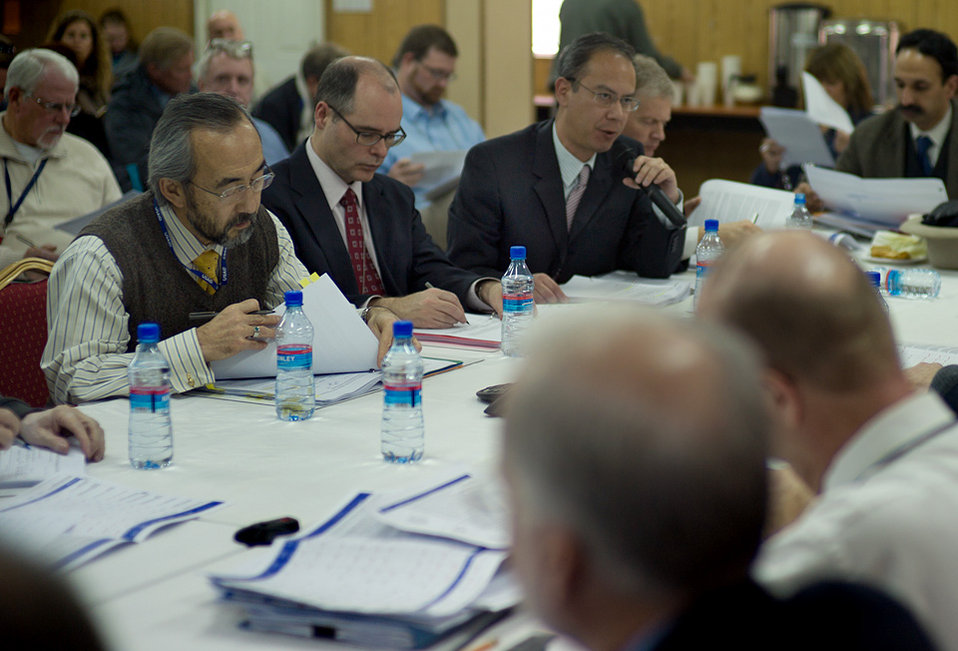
Robert Lopez moderating